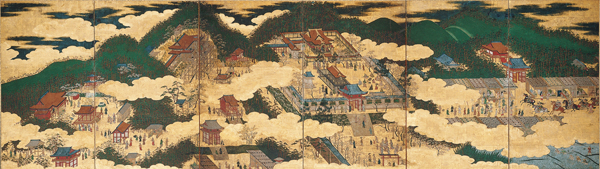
'Temples in Eastern Kyoto', c. 1600, Japan, Momoyama period